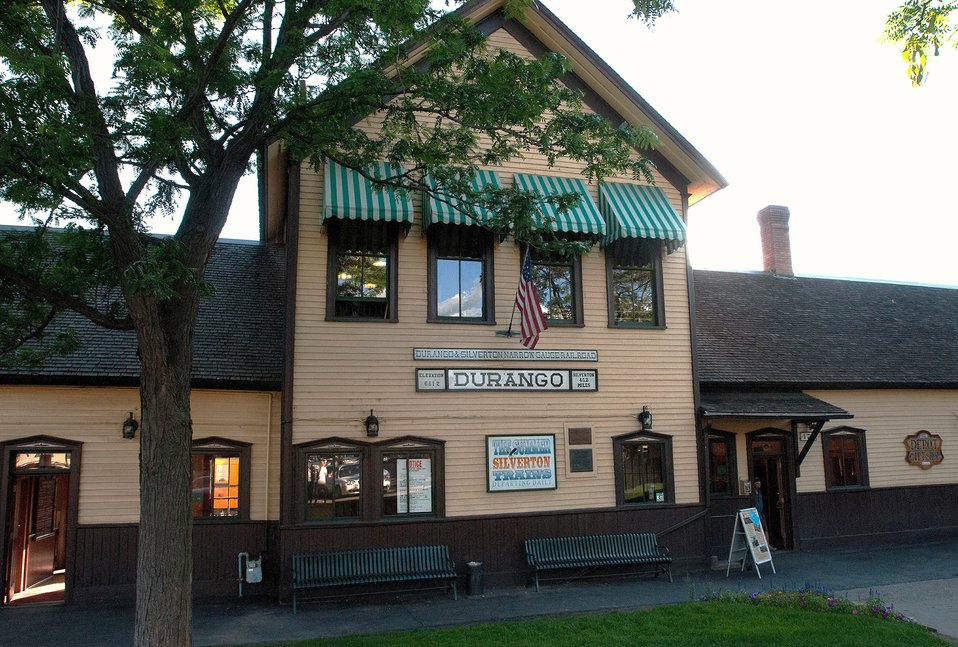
Durango, Colorado is in a historic mining area; now a destination location featuring the Durango & Silverton Narrow Gauge Railroad depot station and other economic providers. Natural resources surround the area. It is home to more than 17,000 people.